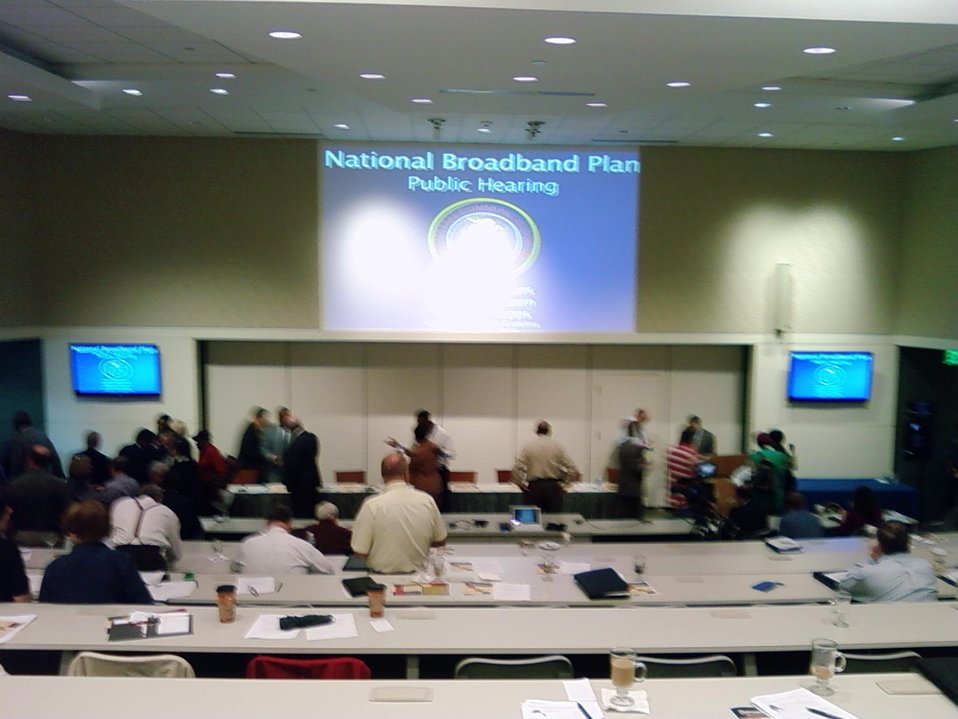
Field Hearing on Broadband Adoption 10-6-09